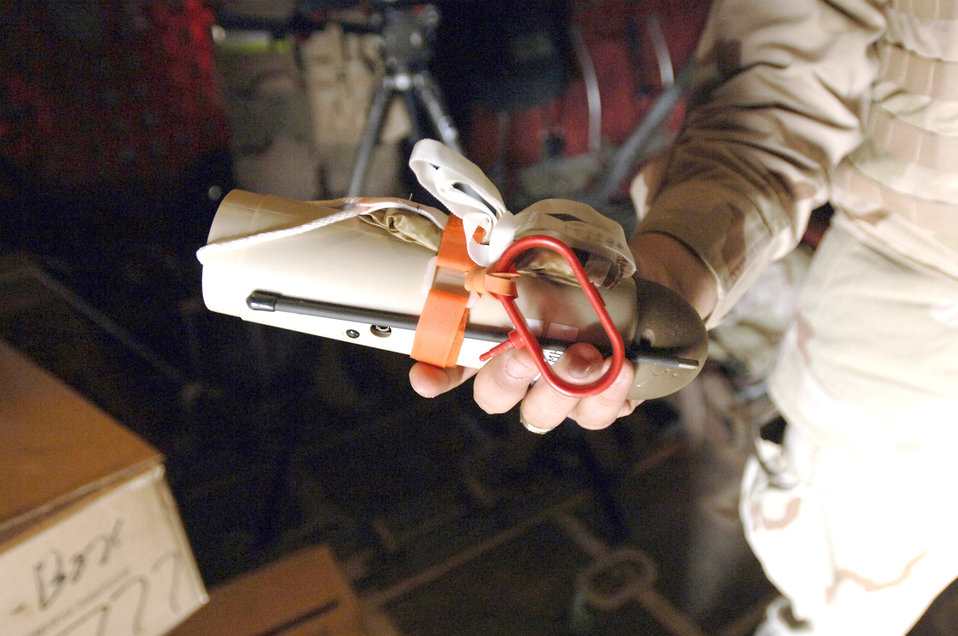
First JPADS airdrop over Iraq a success

Using the Joint Precision Airdrop System in combination with the Improved Container Delivery System, a C-130 Hercules aircrew was able to drop cargo at higher altitudes with improved accuracy over Iraq Feb. 16. This wind sonde device, part of the JPADS, is dropped at high altitudes over a drop zone to measure winds prior to an actual cargo drop. This allows C-130 aircrews to drop cargo at safe distances from enemy fire.